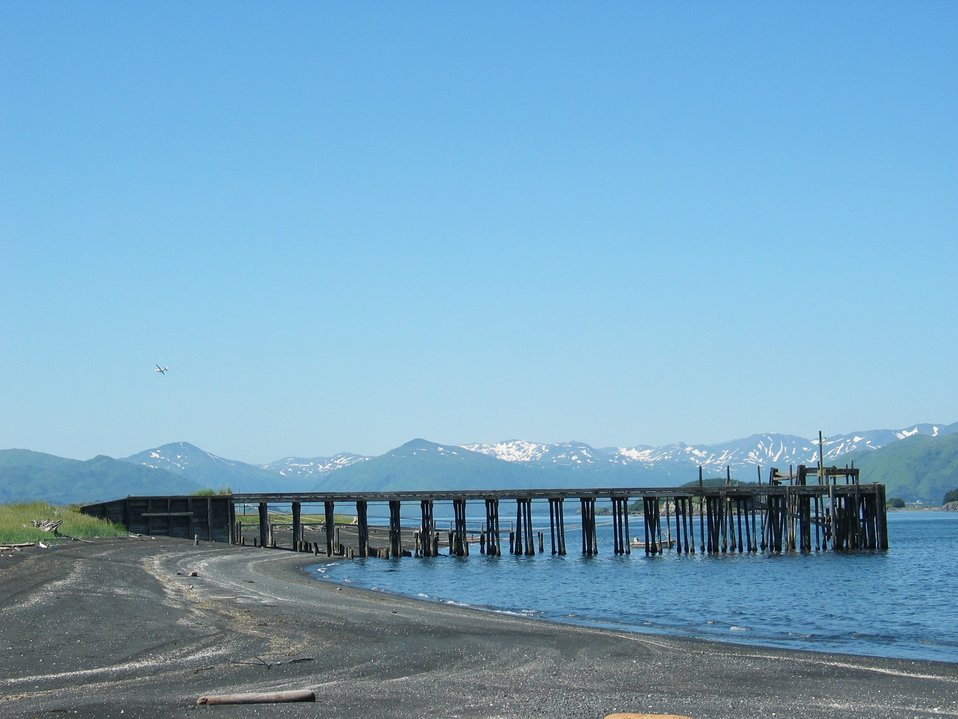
Black sand and cobble beach on Kodiak Island with pier at low tide. Alaska Peninsula mountains are seen in background.